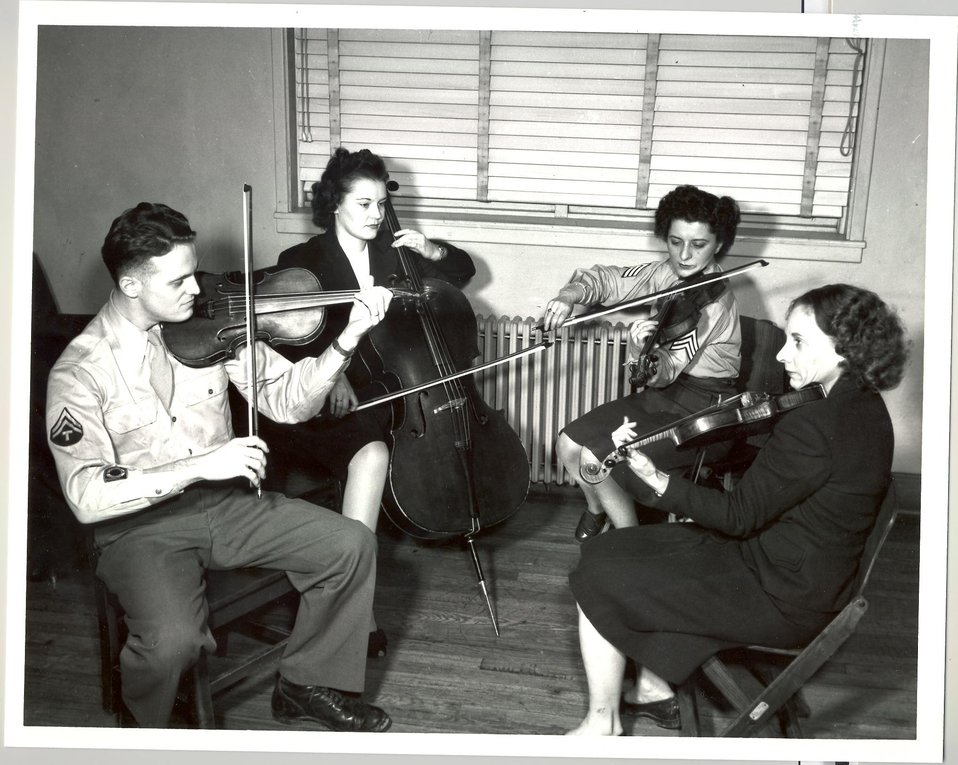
Group of Four Musicians Playing, Oak Ridge Journal